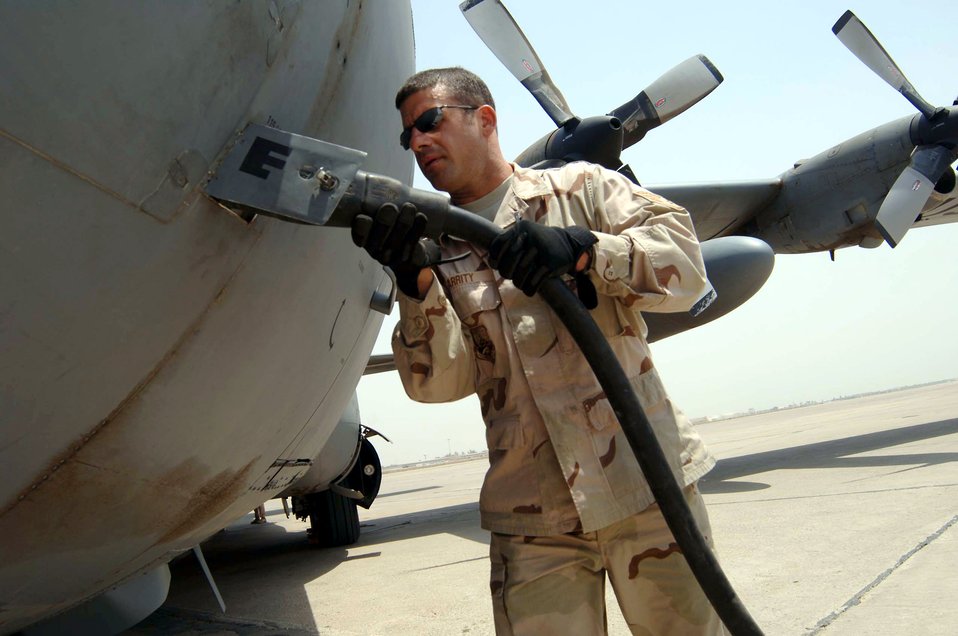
Airmen keep planes at Baghdad airport moving

Staff Sgt. David Garrity plugs in external electrical power to a transient C-130 Hercules cargo aircraft July 27 at Baghdad International Airport in Iraq. The 447th Expeditionary Operations Squadron transient alert team coordinates all traffic on the military airfield here. An average day brings in more than 100 fixed and rotary wing aircraft. Sergeant Garrity is a 447th Expeditionary Operations Squadron crew chief.